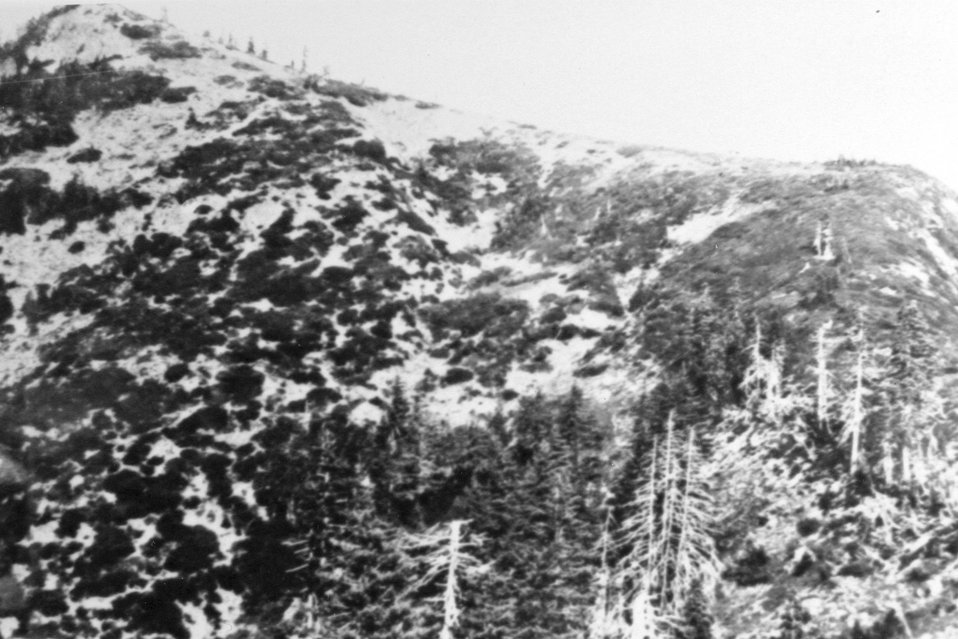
High Ridge Trail Aness to Bear Camp.